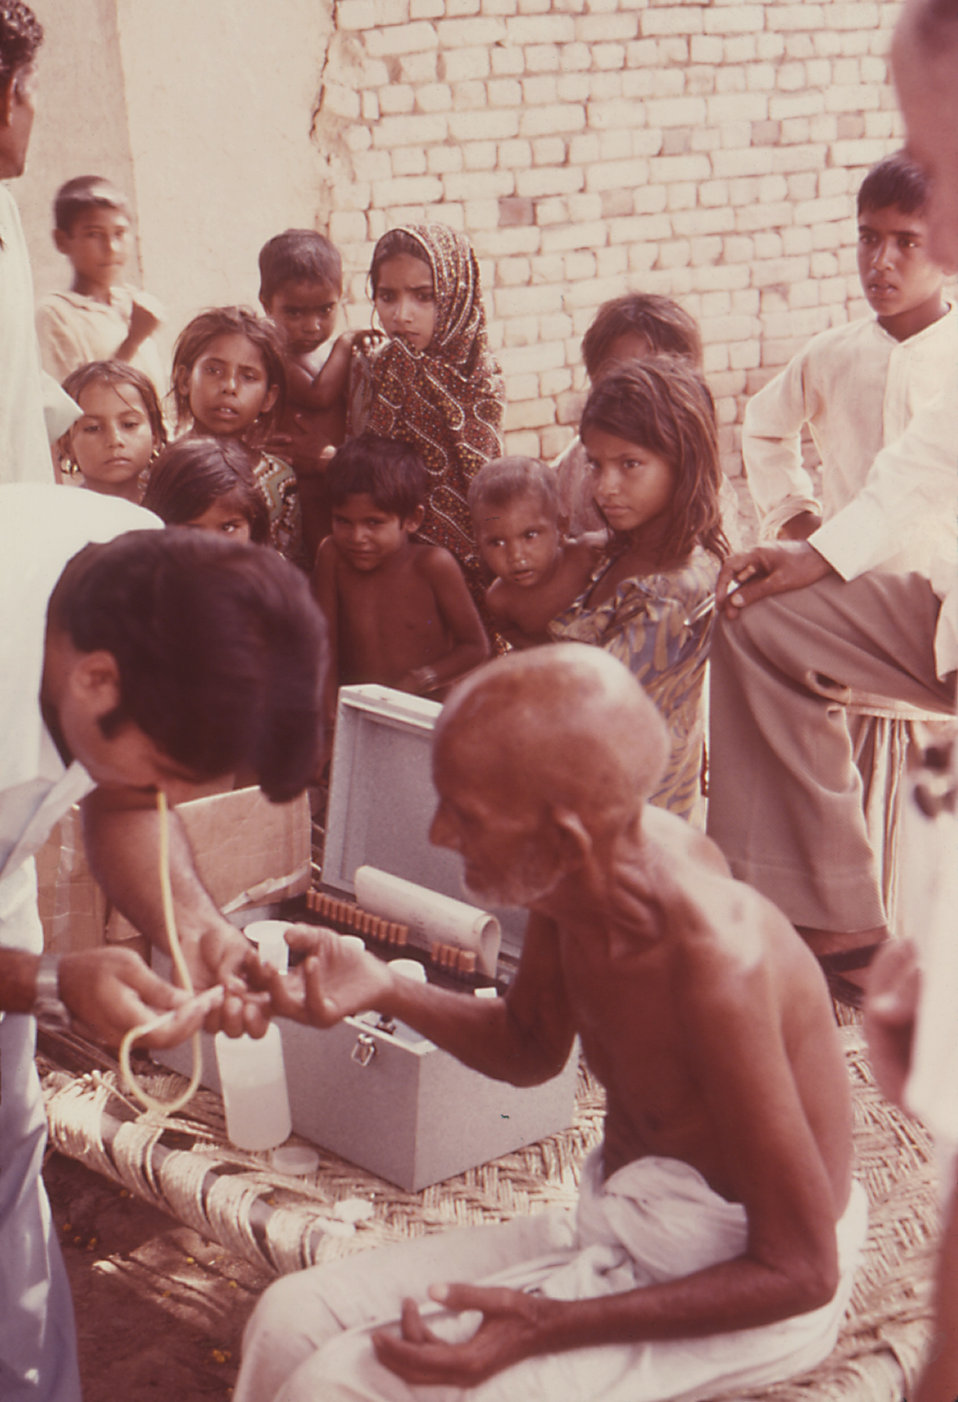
This local Pakistani man is having his blood tested during a 1977 malathion poison study.